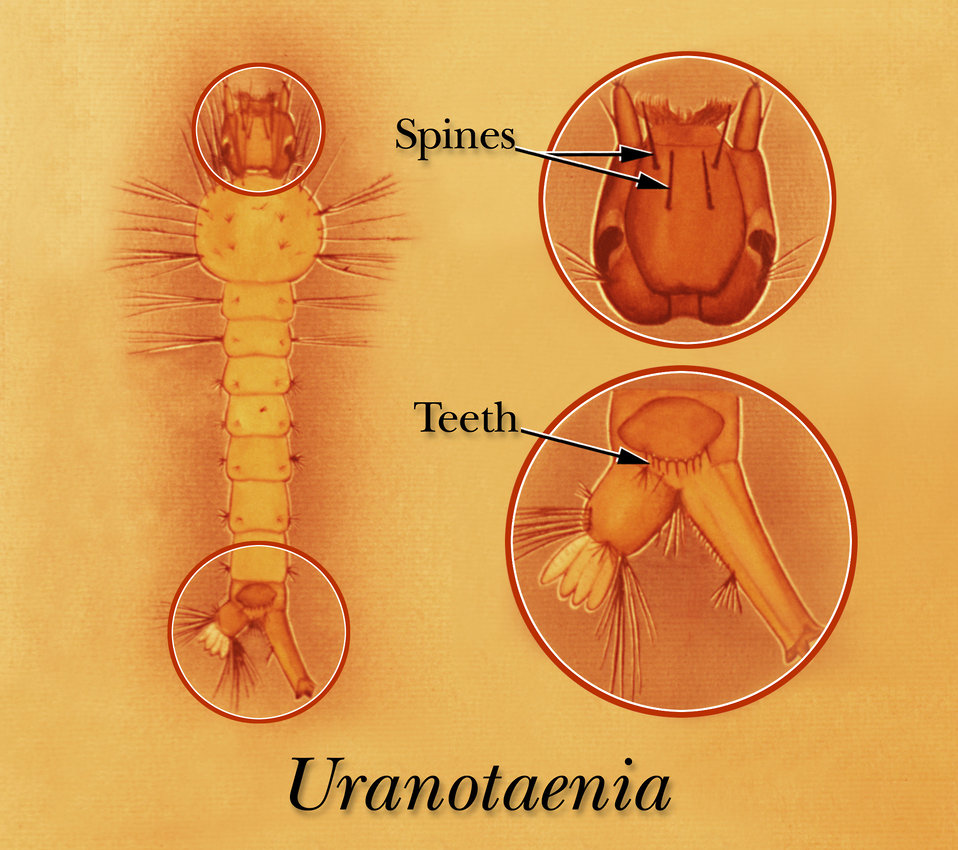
Illustration shows head spines, and 'teeth' on the sclerotized plate of a Uranotaenia mosquito larvae.